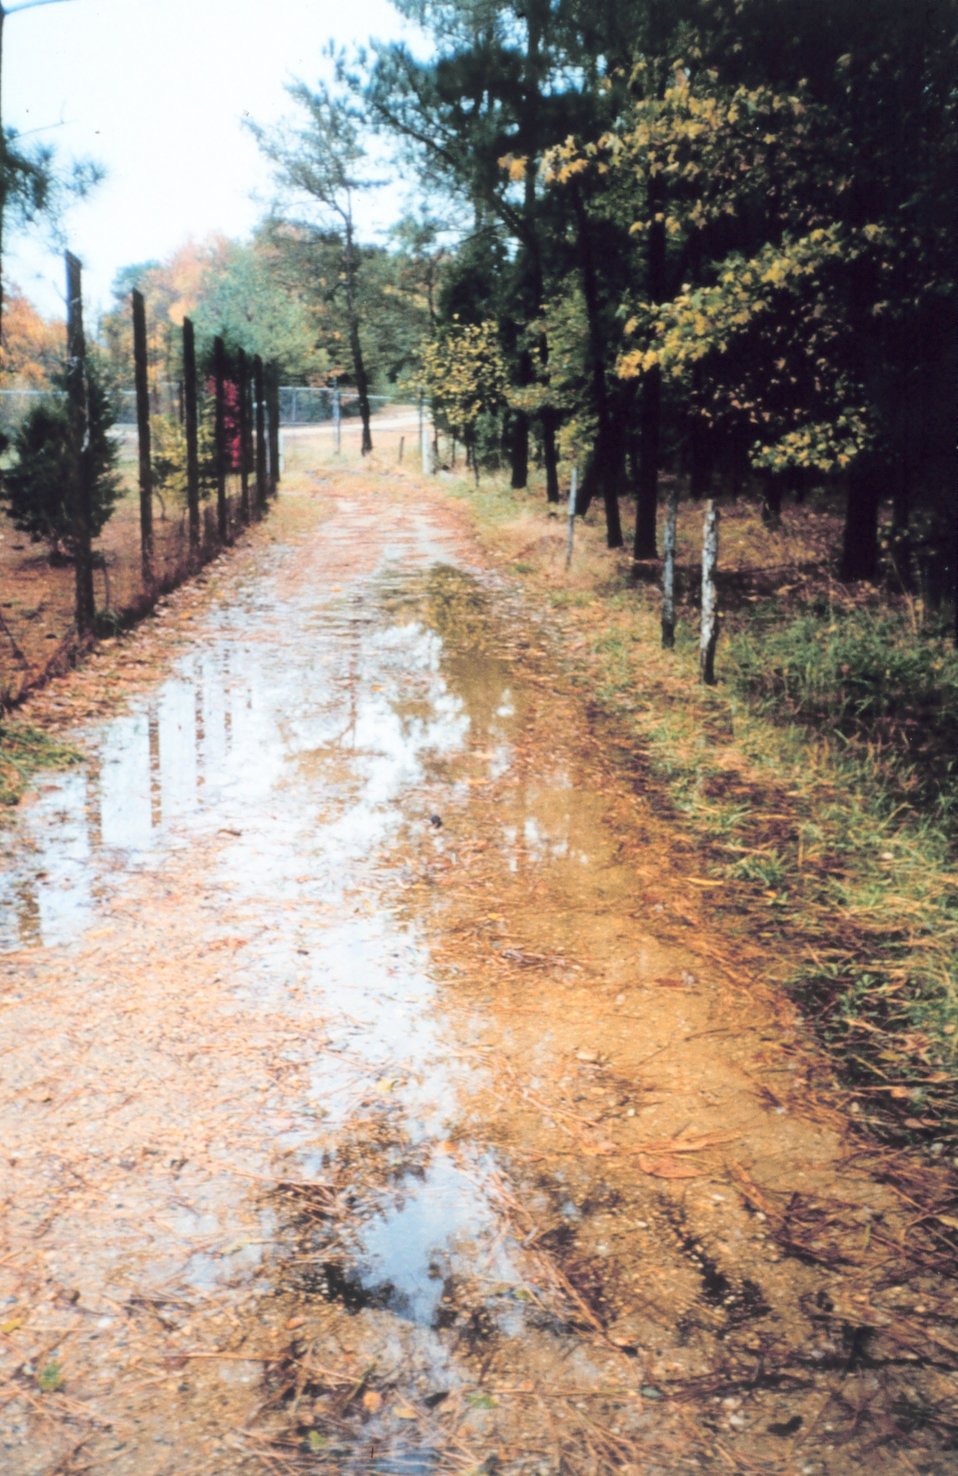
Flooding of low-lying areas by extreme high tides. If sea level continues its rise, such events will become increasingly common.